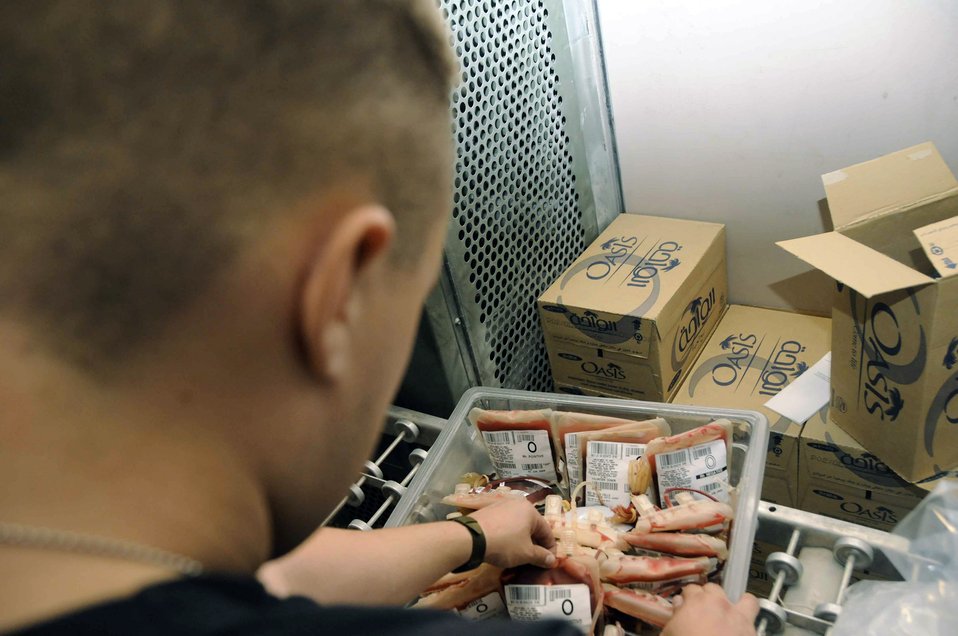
Bloodline for AOR

Airman 1st Class Kenny Davenport packs boxes of blood and plasma at the Blood Transshipment Center May 6 in Southwest Asia. The BTC processes thousands of units of life-saving blood for use in medical facilities for warfighters and civilian casualties. Airman Davenport a BTC lab technician with the 379th Expeditionary Medical Group.